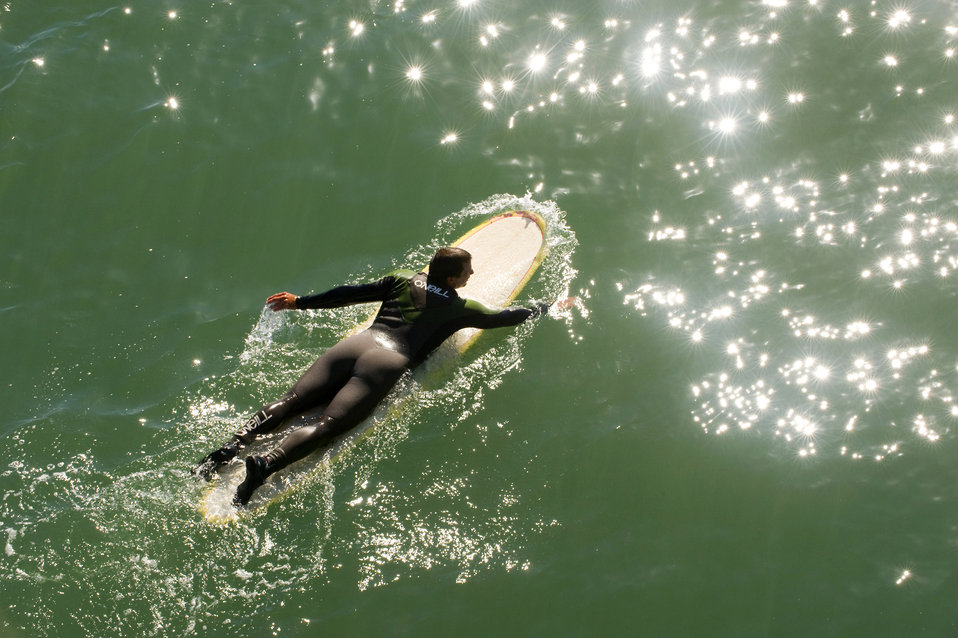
Surfer at huntington beach.